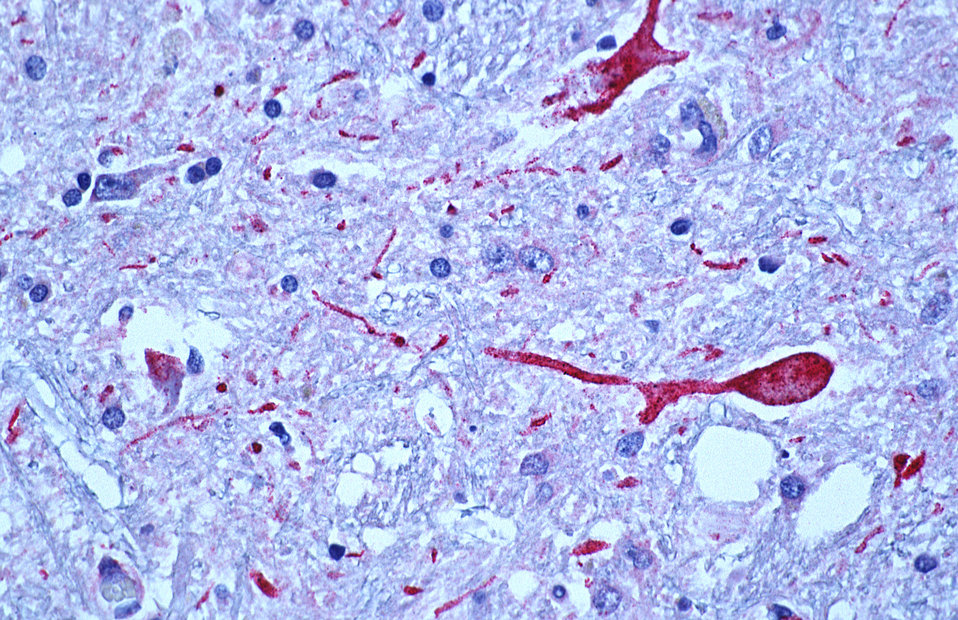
Brain tissue from a West Nile encephalitis patient.